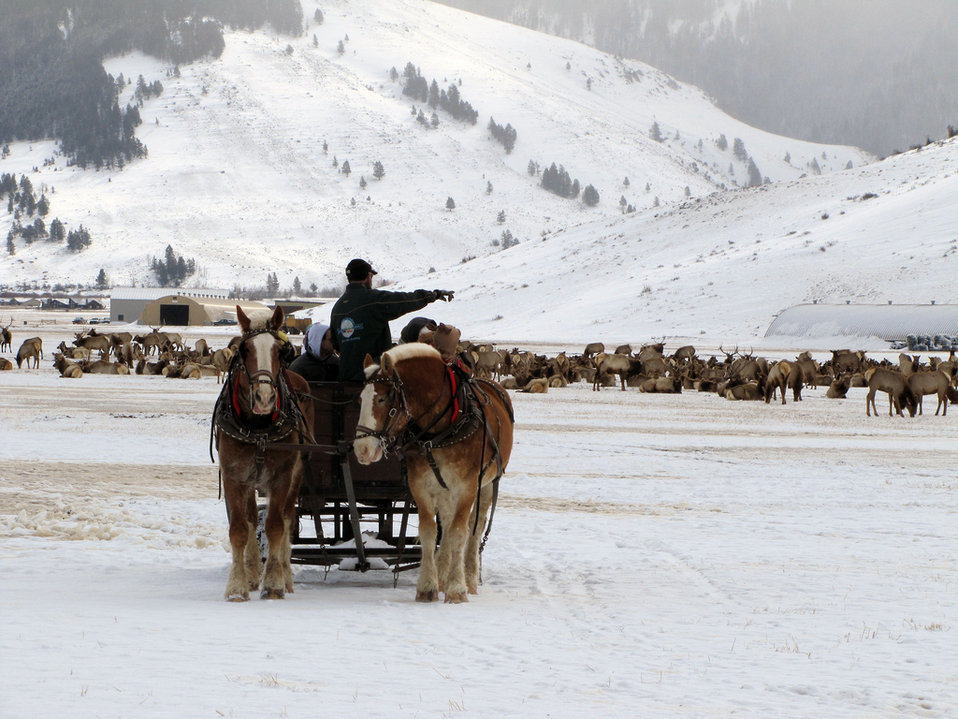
sleigh ride

National Elk Refuge, WY